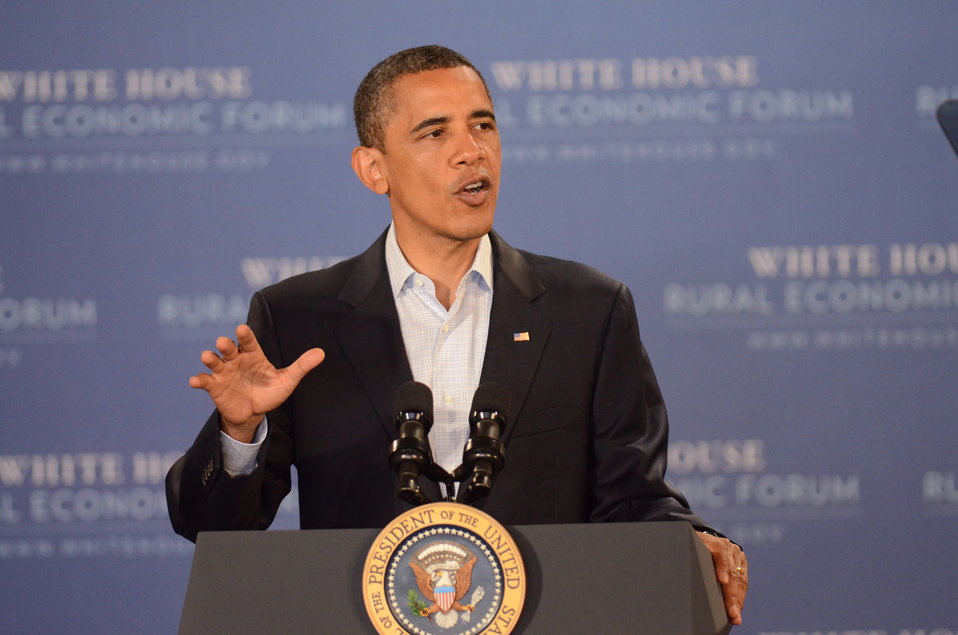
President Barack Obama speaking at the Northeast Iowa Community College, for a White House Rural Economic Forum on Tuesday, Aug. 16, 2011. The President’s visit will focus on agriculture’s contribution to the national economy, and how to create more jobs in rural America.